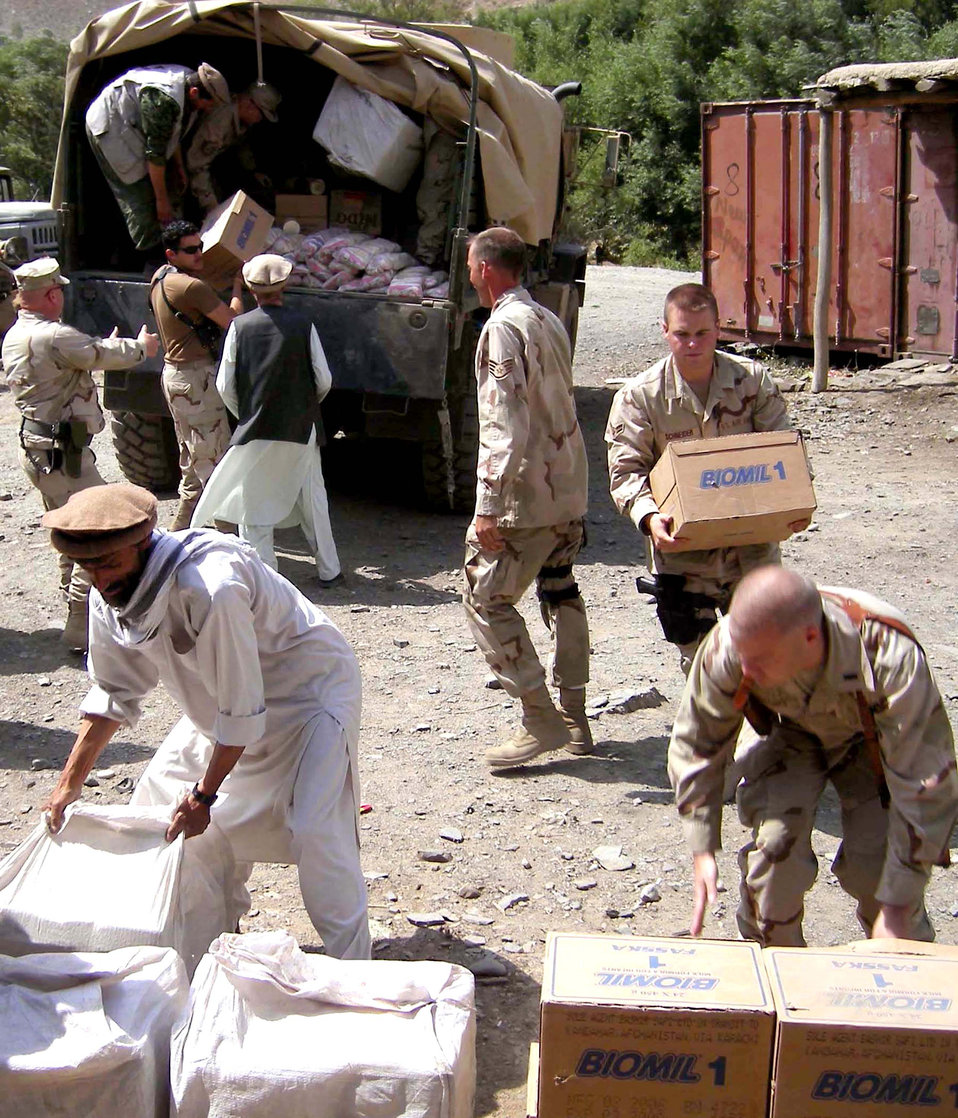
Humanitarian assistance

Members of the Panjshir Provincial Reconstruction Team and volunteers unload a 5-ton truckload of humanitarian assistance food supplies near Abdara, Afghanistan, on July 30. More than 180 Afghan locals are building a road by hand to connect three villages to the main road across the Panjshir River.